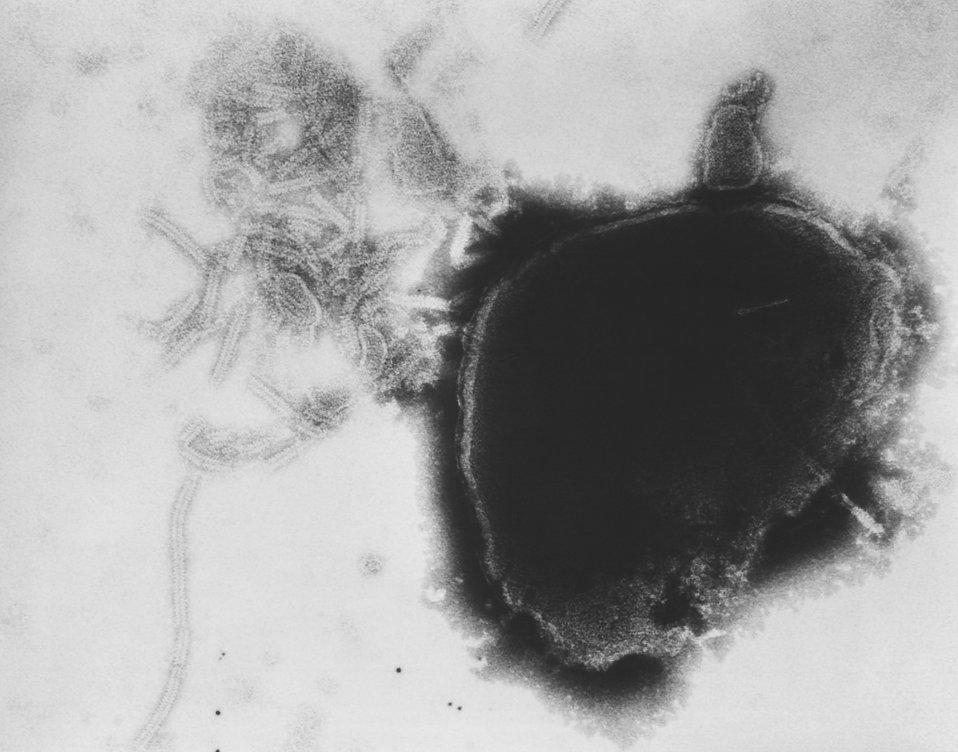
This transmission electron micrograph (TEM) revealed the presence of numerous paramyxovirus virions, which in this instance, were responsible for a case of the mumps. Paramyxoviruses are members of the family, Paramyxoviridae, and those that cause mumps in humans belong to the genus, Rubulavirus. The virus itself can present itself in a number of morphologic shapes, including spherical, and stand-like, or filamentous, ranging from 150nm to 200nm in diameter, and 1000nm to 10000nm in length. At its core lies a non-segmented, negative-sense RNA genome.